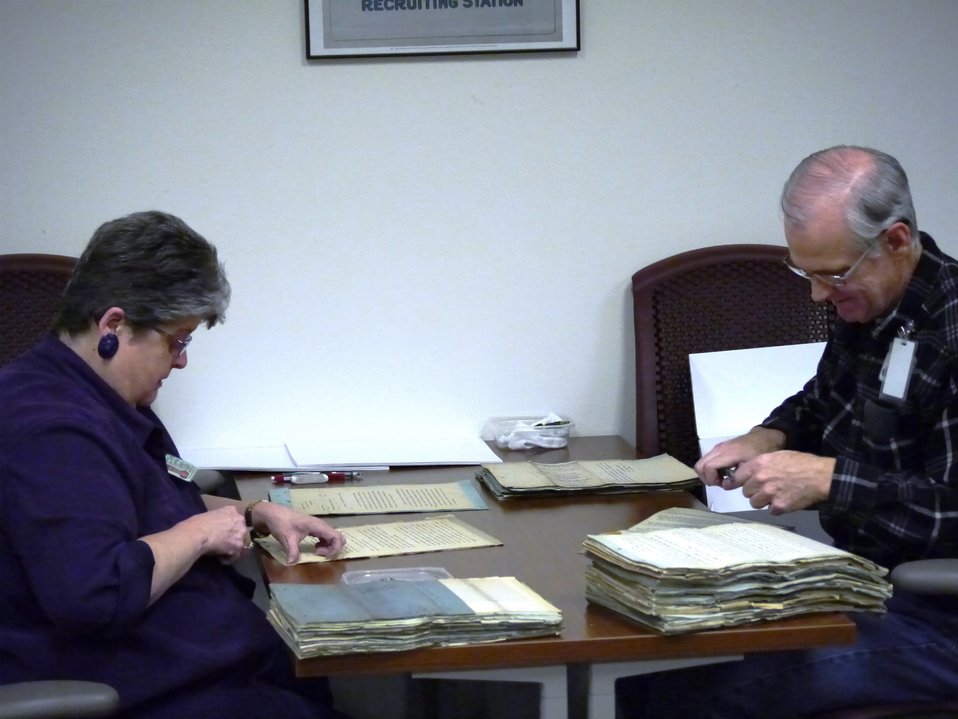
Volunteers Carrie and Earl Gibson working on New Orleans Federal Court records.; Location: National Archives at Fort Worth, John Burgess Facility, Fort Worth, TX